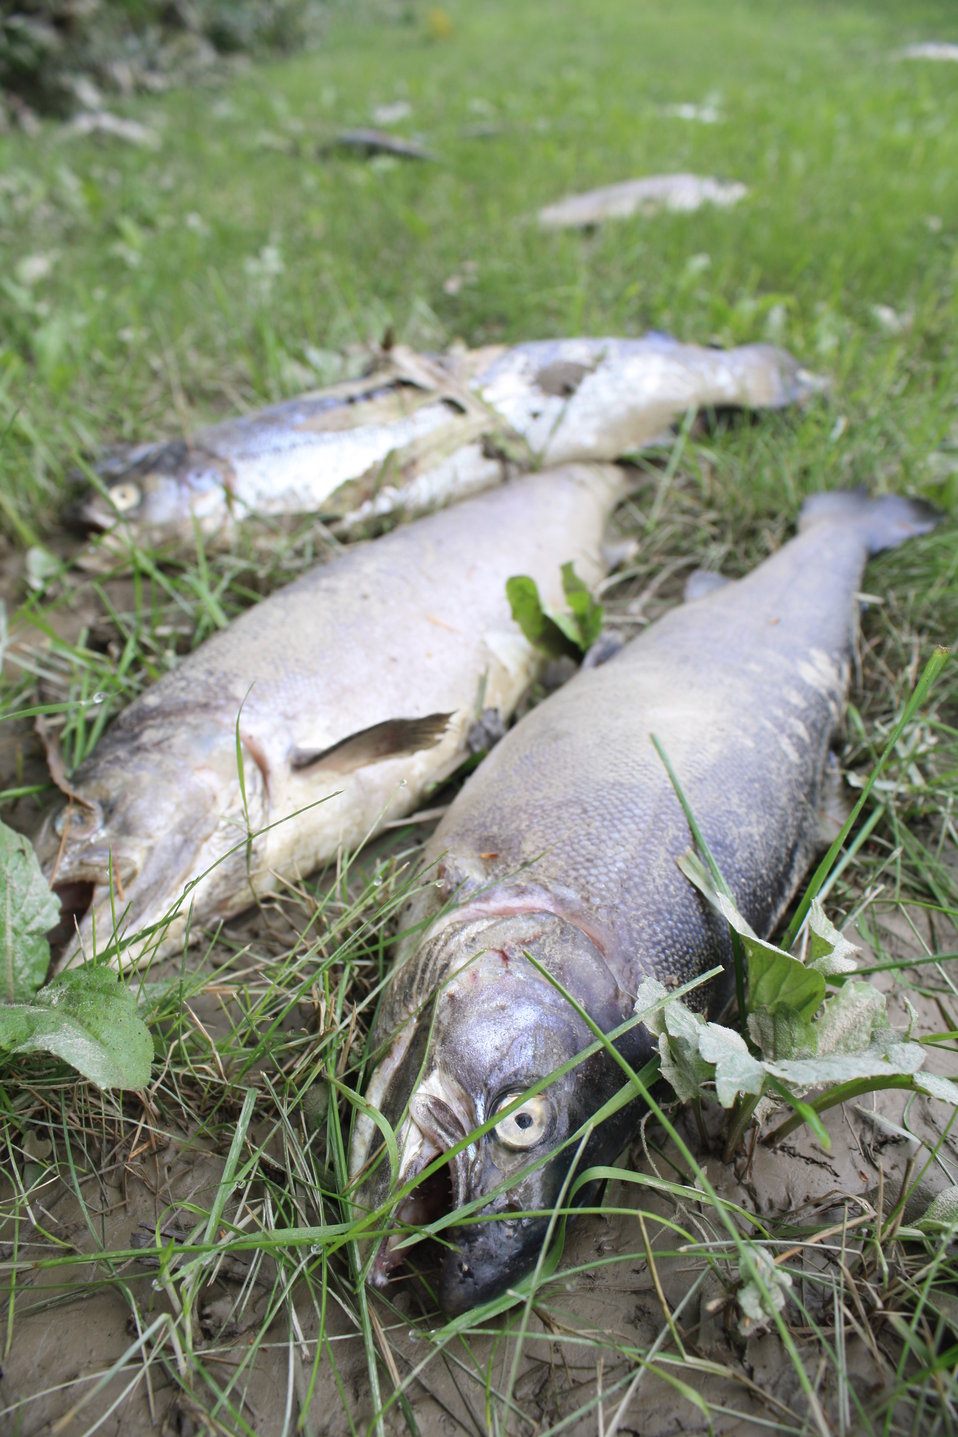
Dead fish after Hurricane Irene flood event

High flood waters breached some circular fish rearing pools at White River National Fish Hatchery during Hurricane Irene. Some fish escaped, and were left stranded by receding flood waters.